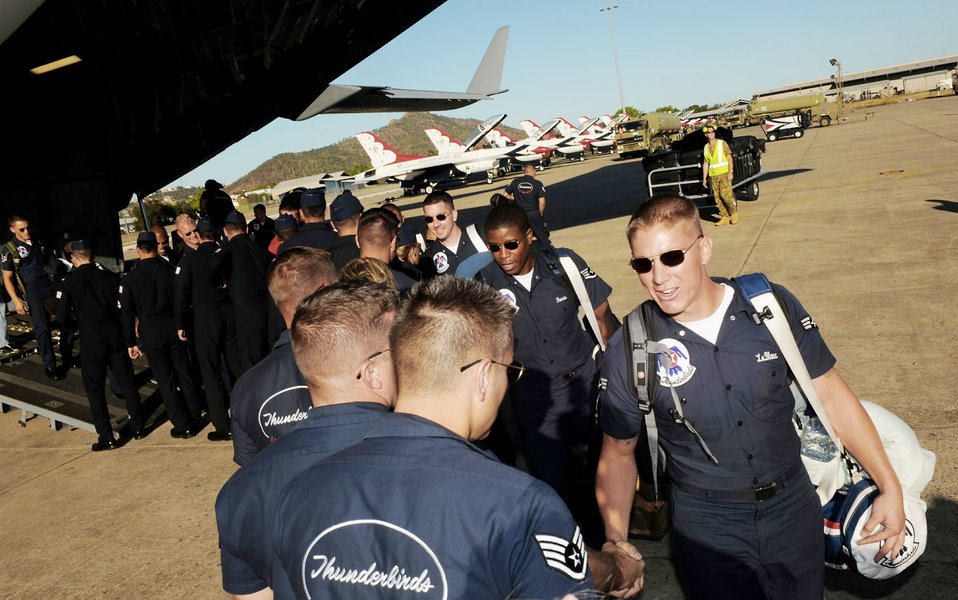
Thunderbirds take the show down under

The Air Force Thunderbirds greet one another as members disembark from a C-17 Globemaster III Sept. 21, 2009, in Townsville, Australia.